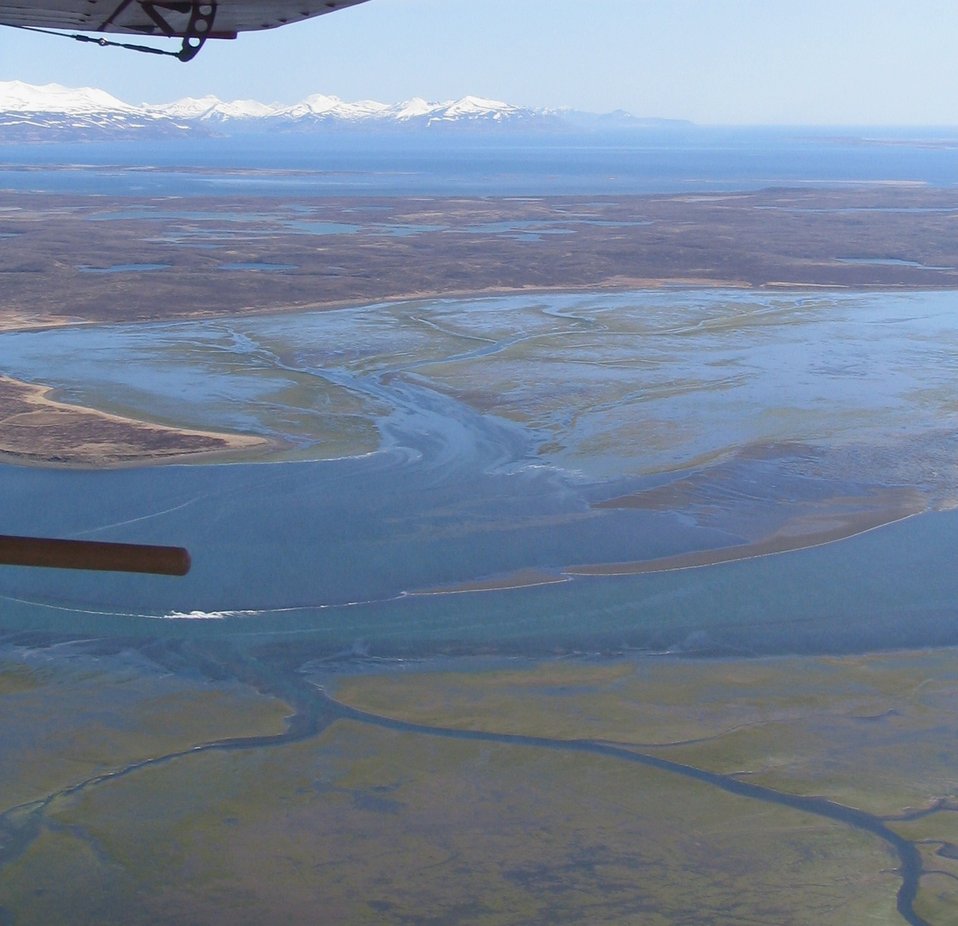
Izembek Isthmus

View from Izembek Lagoon to Cold Bay, Izembek Wilderness, Izembek National Wildlife Refuge
Photo by Kristine Sowl,
USFWS, Public Domain